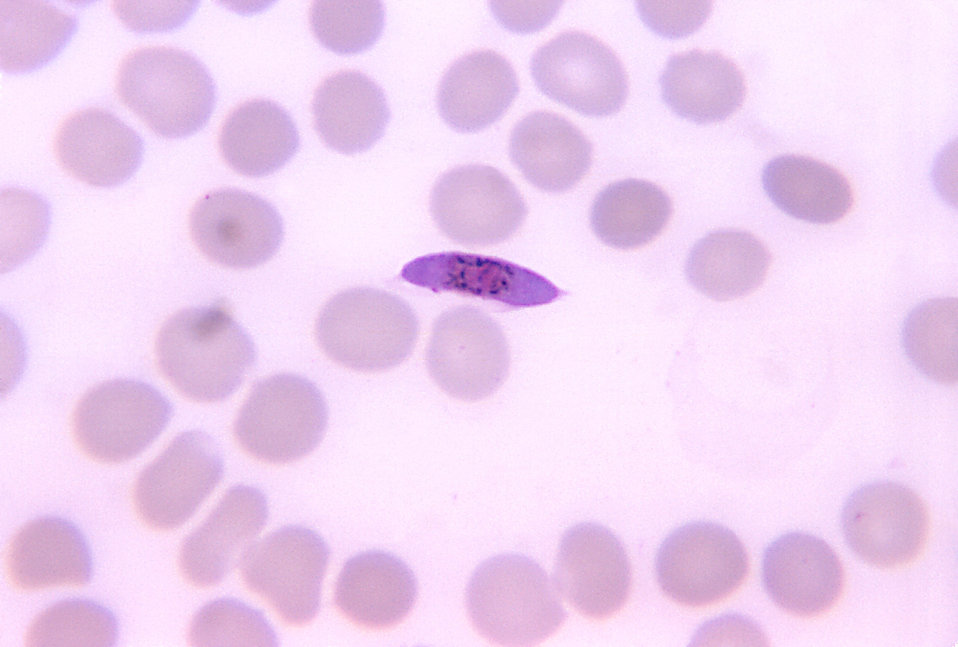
This thin film blood smear reveals a P. falciparum macrogametocyte using Giemsa stain; Mag. 1125X.